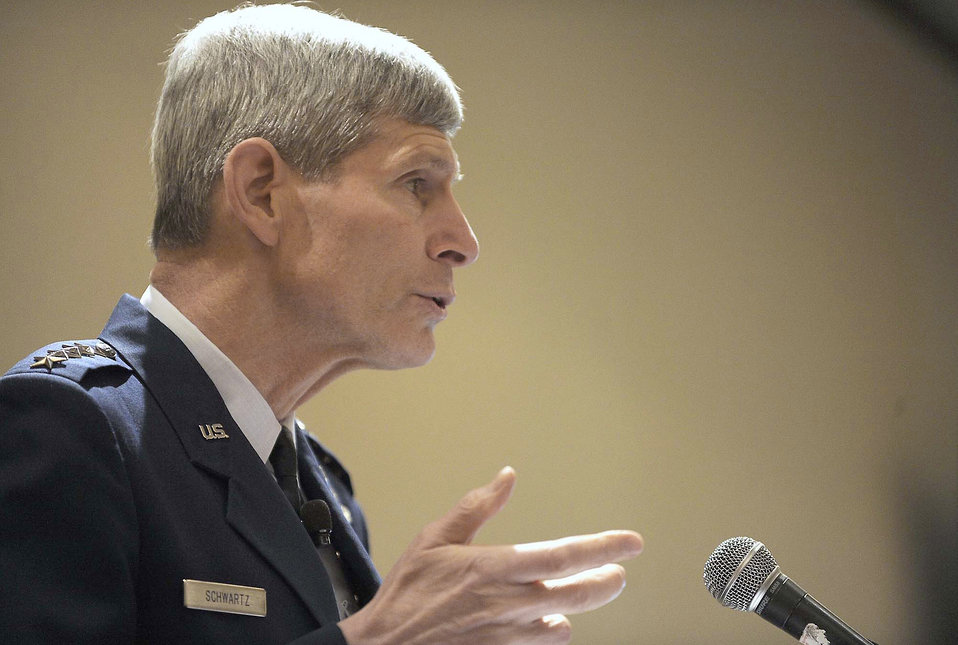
CSAF talks cooperation, efficiency at defense conference

Air Force Chief of Staff Gen. Norton Schwartz speaks to attendees March 2, 2011, at the 2011 Defense Programs Conference in Arlington, Va. In his comments, General Schwartz said it will be important for the Air Force and the private sector to work together given the strategic complexity both face.